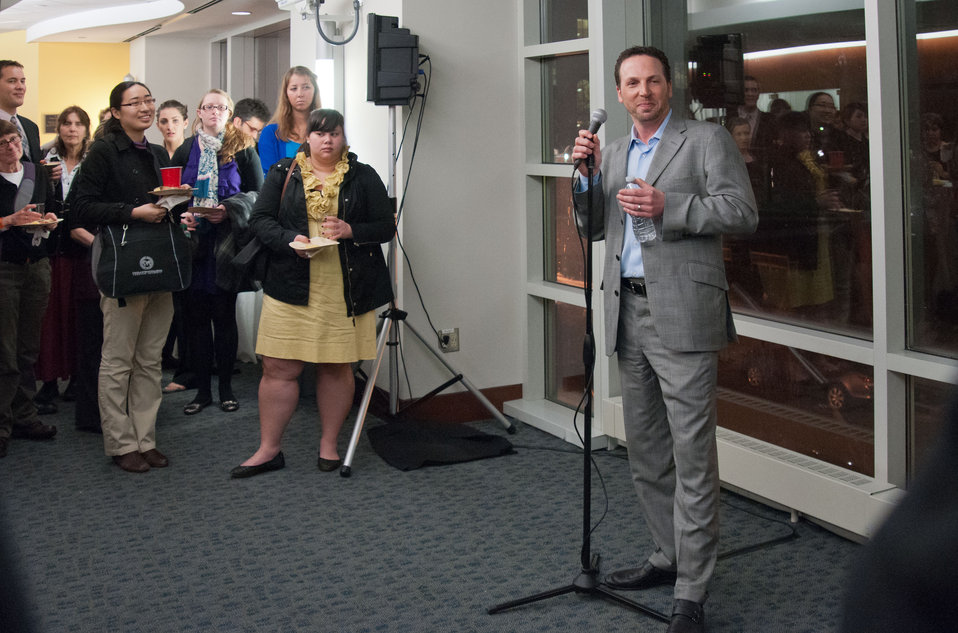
Restaurant Group Concept Developer and Managing Partner Dan Simons welcomes the participants of the “Shaping the Farm Bill for a Sustainable Future” Forum in the Jack Morton Auditorium, at the Trachtenberg School of Public Policy and Public Administration, on the George Washington University campus in Washington, D.C., on Thursday, March 1, 2012.